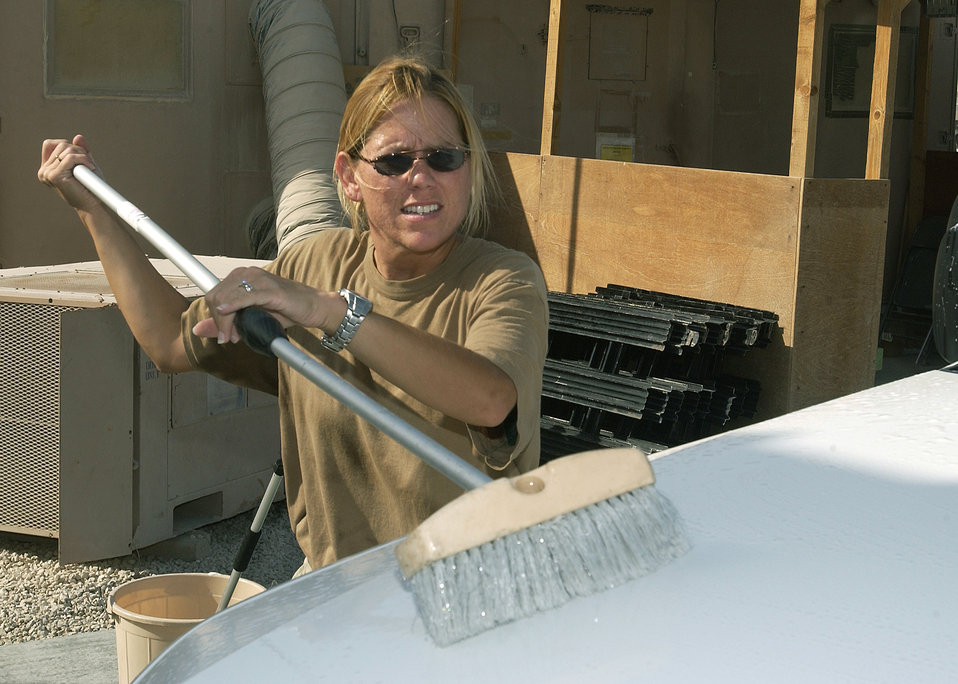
Making a clean sweep

SOUTHWEST ASIA -- Senior Airman Kathy Manley washes a vehicle at a forward-deployed location. She is assigned to the 379th Expeditionary Logistics Readiness Squadron's vehicle operations section. Airman Manley is deployed from the 96th Logistics Readiness Squadron at Eglin Air Force Base, Fla.